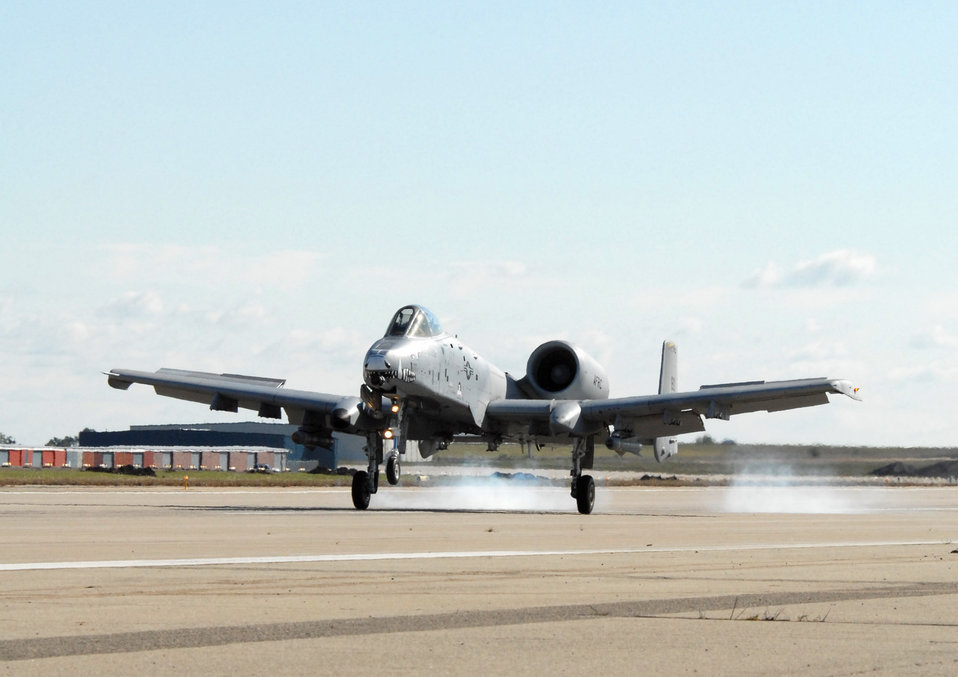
Hawgsmoke 2008

An A-10 Thunderbolt II from the Air Force Reserve Command's 917th Wing at Barksdale Air Force Base, La., touches down at the Salina, Kan., airport Oct. 15 for Hawgsmoke 2008, bienniel competition for A-10 pilots from across the Air Force that tests aerial bombing and gunnery skills.